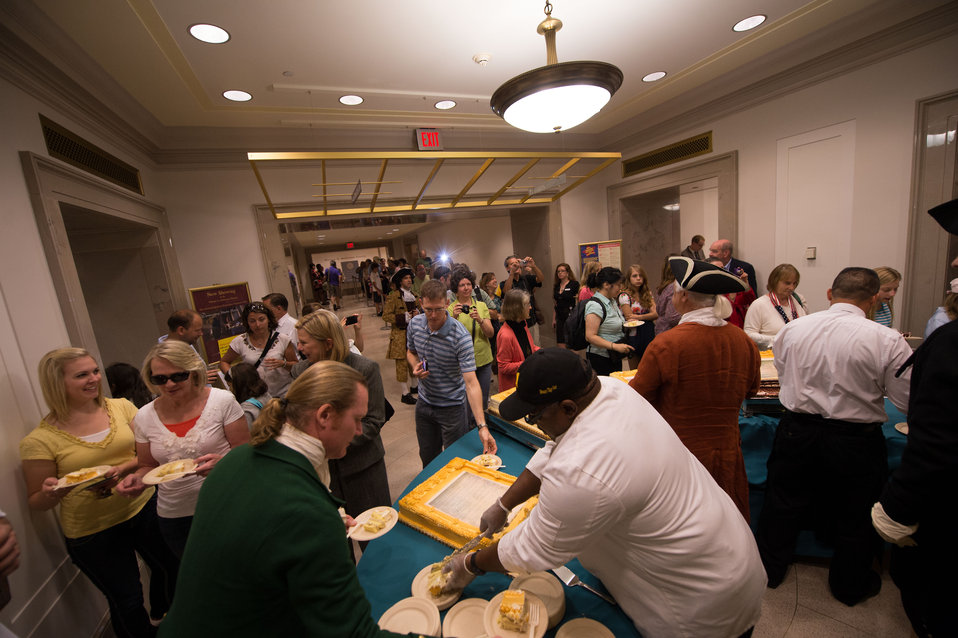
Happy Birthday, Constitution!